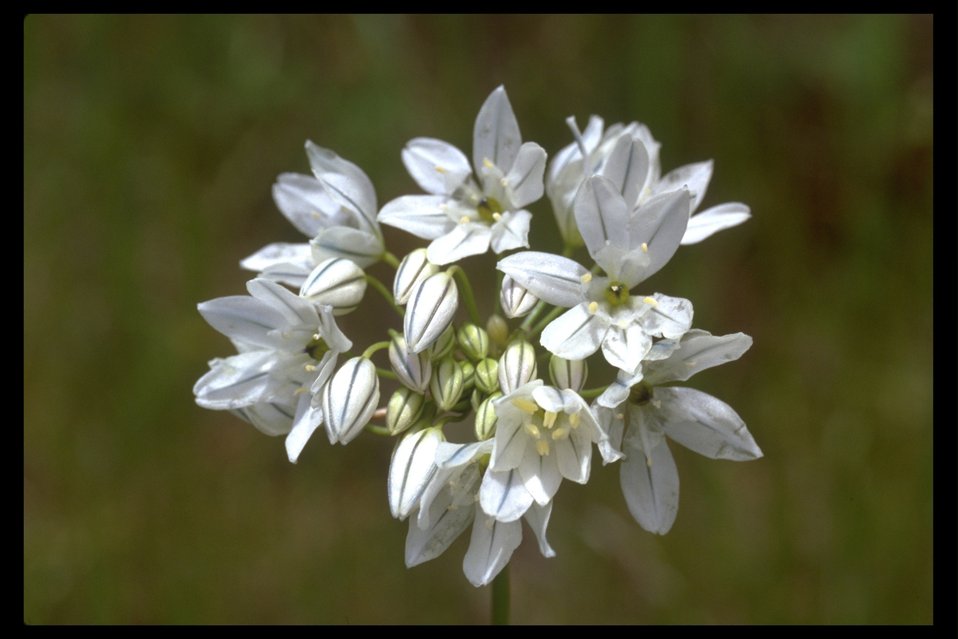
White Hyacinth, White Brodiaea (Trieleia hyacinthina) near Trail, OR.